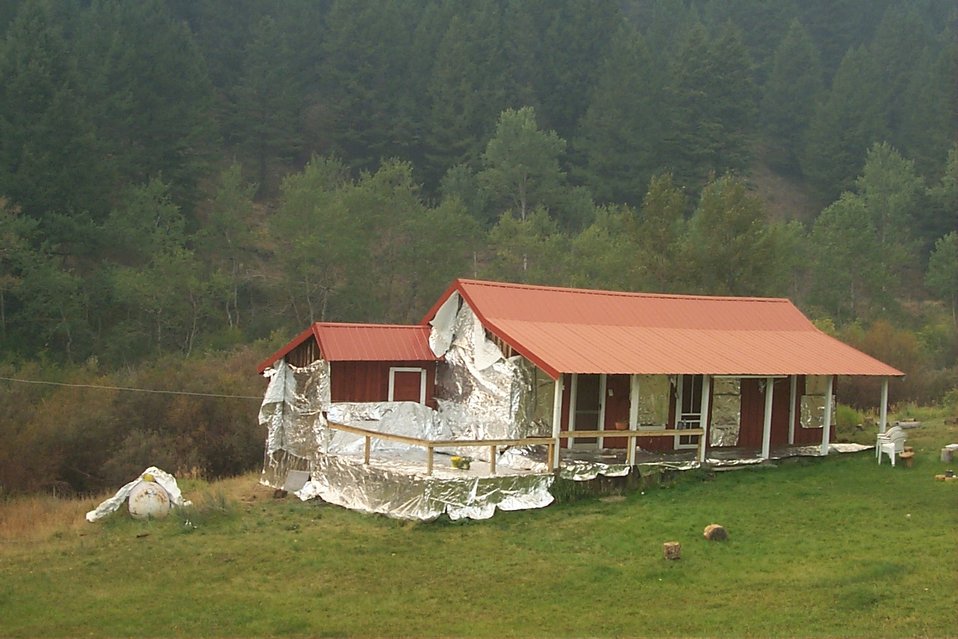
Fire retardant measures Urban interface Fire Clearwater Fire Salmon Field Office USRD Upper Snake River District